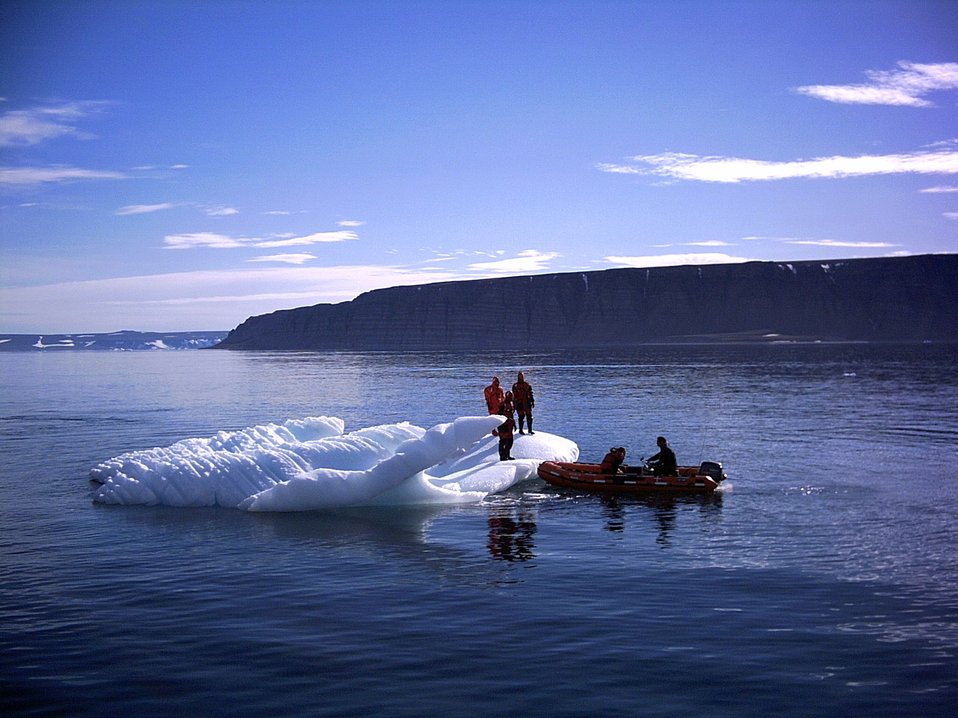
Open water

THULE AIR BASE, Greenland -- Airmen explore an iceberg in 30-degree water during a demonstration of Danish Police water survival suits. The team dove into the Arctic Ocean during an